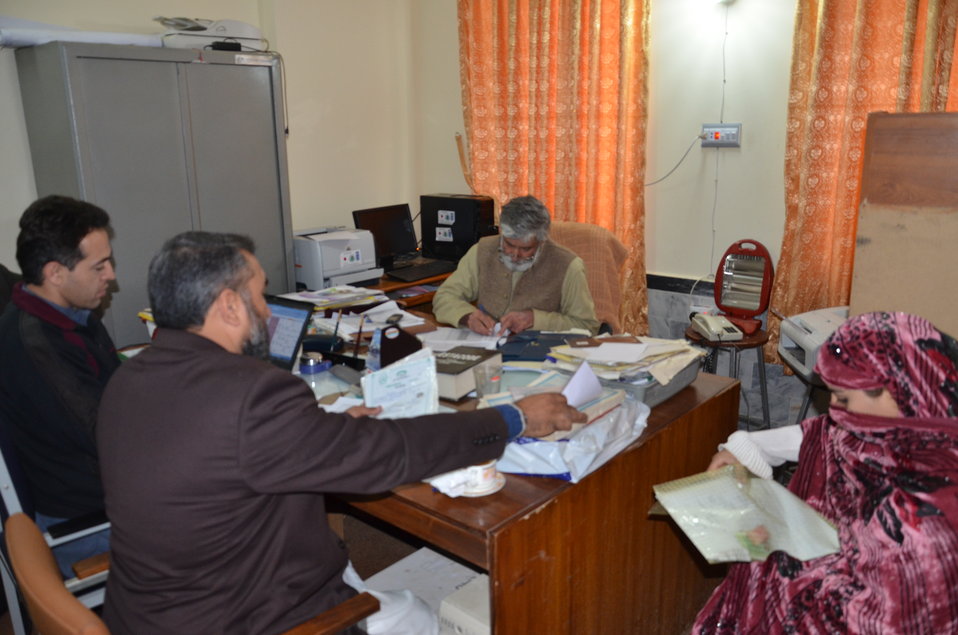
Interviews of female candidates for 18-month CMW training (Buner) (1)

With the support from USAID, Save the Children is training additional 200 CMWs from seven districts of Malakand Division and four agencies of FATA (Bajaur, Mohmand, SWA and Orakzai) through USAID’s FATA-KP Health Program. The program will also provide support in establishing birthing stations for the trained CMWs. USAID’s FATA-Khyber Pakhtunkhwa Health Program is a 5-year USAID funded program, implemented by Save the Children in seven districts of Malakand Division and four agencies of FATA (Bajaur, Mohmand, SWA and Orakzai) The strategic objective of the program is to improve health status of children and mothers in FATA and KP.
Interviews of candidates from Buner for 18-month CMW training . In collaboration with MNCH program KP and FATA a panel of 4 members was constituted, i.e. Representative of MNCH Program FATA/KP, District Health Officer of concerned District, Field Program Manager of USAID’s FATA-KP Health Program and District/Agency Coordinator of the concerned district/Agency.